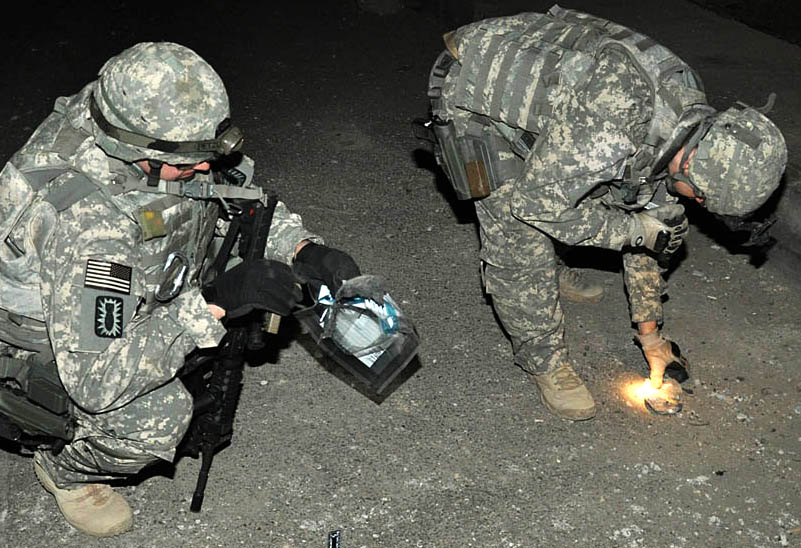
American servicemembers provide battlefield forensics

Members of the weapons intelligence team provide counter improvised explosive device intelligence through collection, analysis and tactical exploitation in support of Multinational Corps-Iraq in February in Iraq. By collecting evidence and staying ahead of the enemy, the WIT helps prepare U.S. and coalition forces prepare for future attacks.